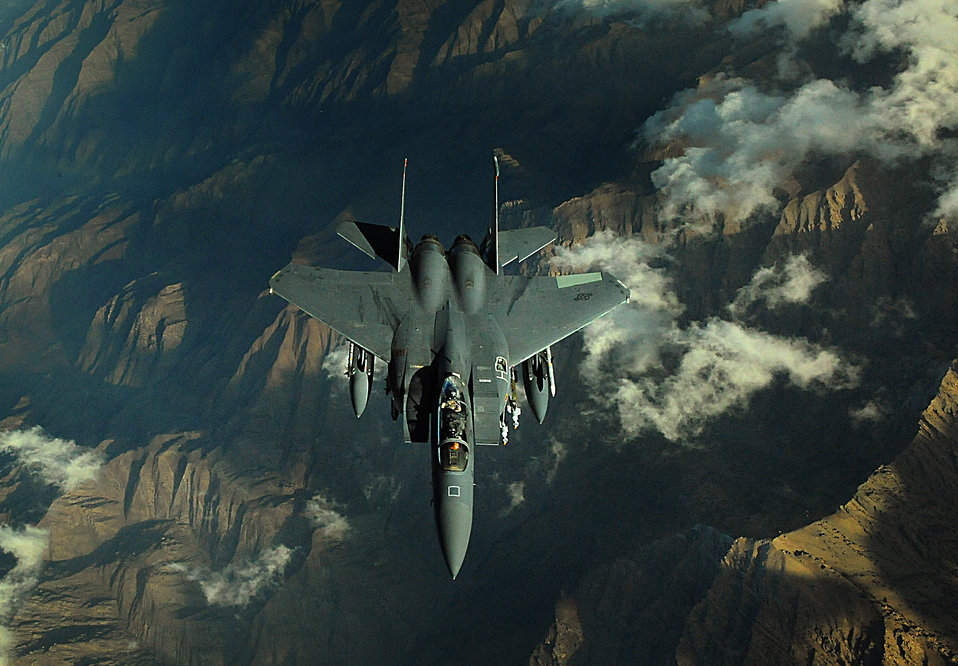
Dec. 27 airpower summary:F-15Es provide armed aerial overwatch

An F-15E Strike Eagle soars over Afghanistan providing close-air support and armed aerial overwatch to deter enemy activities. The Strike Eagle is a dual-role fighter designed to perform air-to-air and air-to-ground missions.